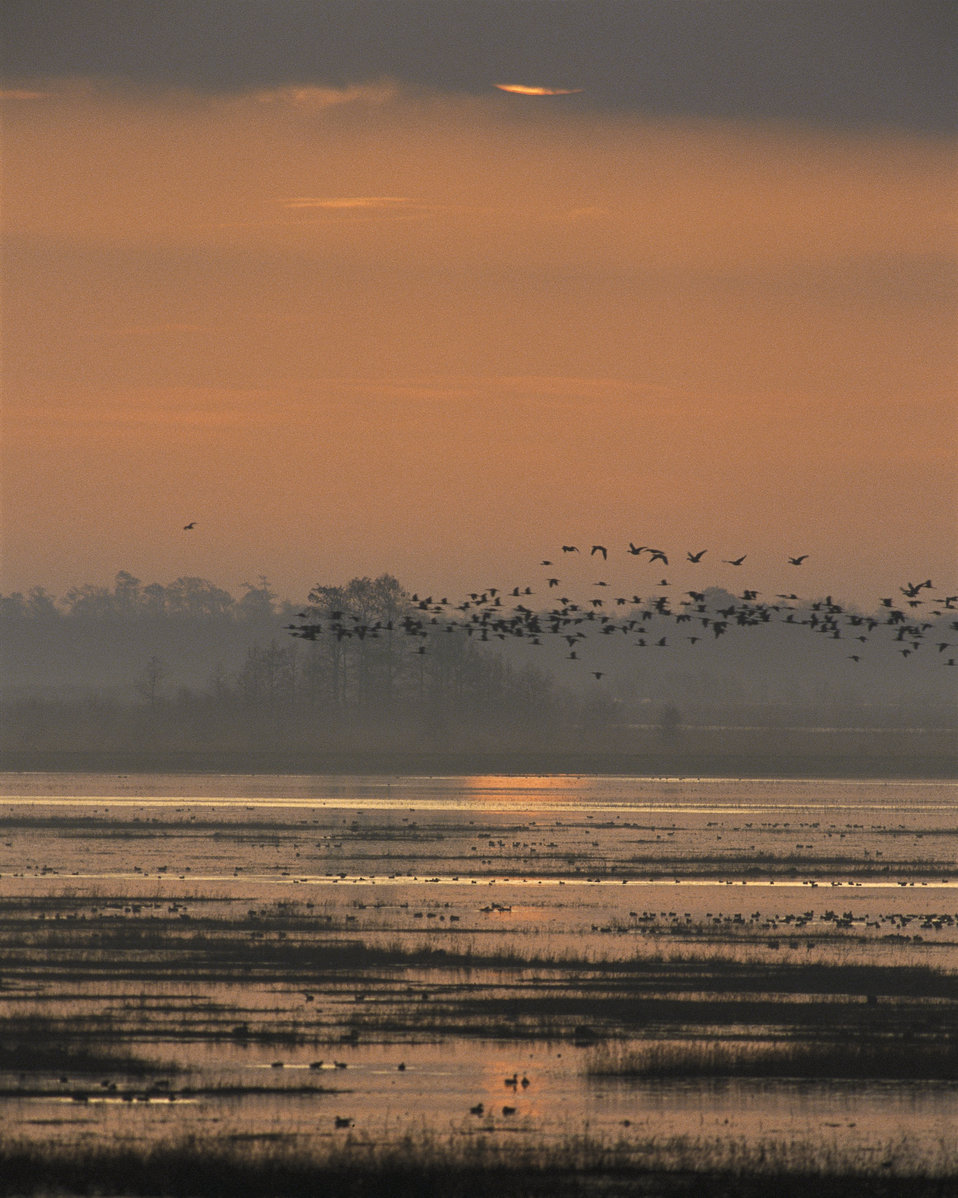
sunset at Lacassine

Lacassine National Wildlife Refuge, LA